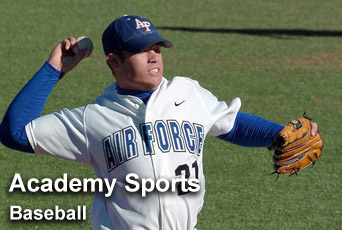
Academy sports: Baseball

For up-to-date scores on all U.S. Air Force Academy sports, visit their Web site at www.goairforcefalcons.com.